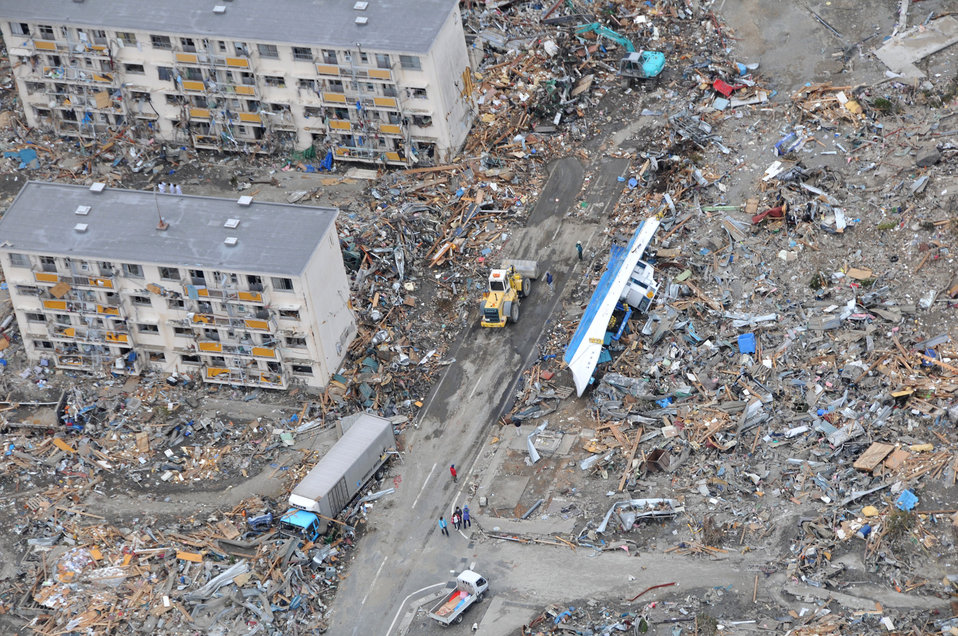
Search and rescue

An Air Force search and rescue team in an HH-60 G Pave Hawk helicopter surveys the damage as it flies over Sendai, Japan, March 14, 2011.